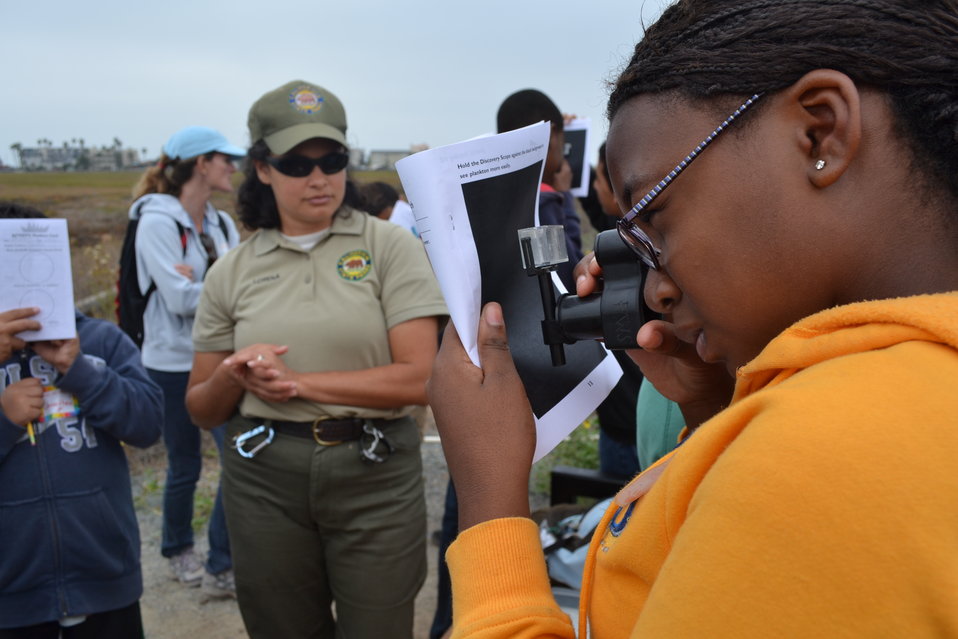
Looking for plankton

Environmental Educator Lorena Warner-Lara looks on as the students complete their plankton lesson and activity